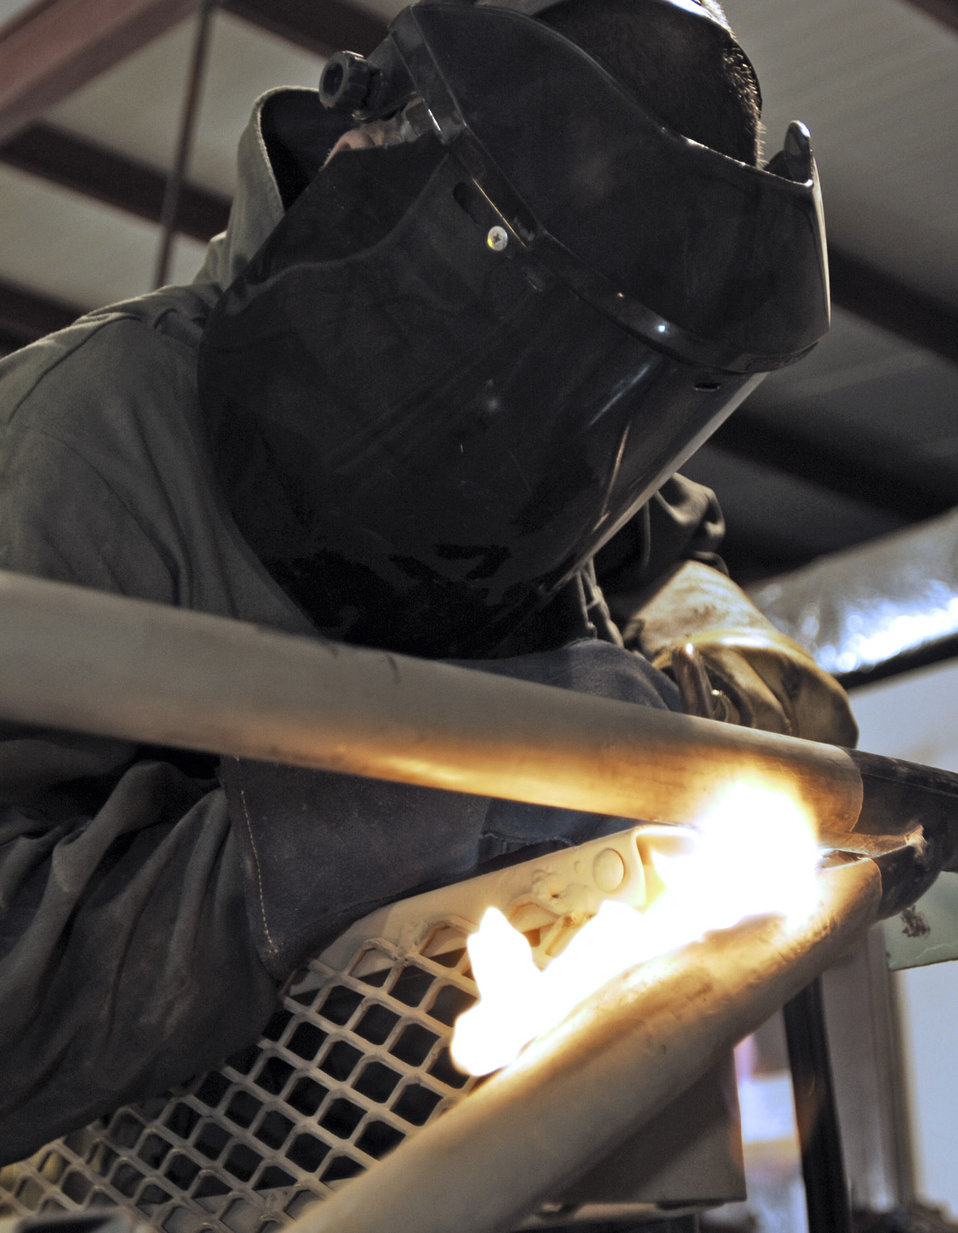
Showing his metal

Senior Airman Joseph Krafchak uses an acetylene torch to repair an aircraft maintenance stand Aug. 2 at Joint Base Balad, Iraq. Aircraft maintainers use the stands to perform maintenance on F-16s. Airman Krafshak, a metals technician journeyman with the 332nd Expeditionary Maintenance Squadron here, is deployed from Shaw Air Force Base, S.C. His hometown is Lompoc, Calif.